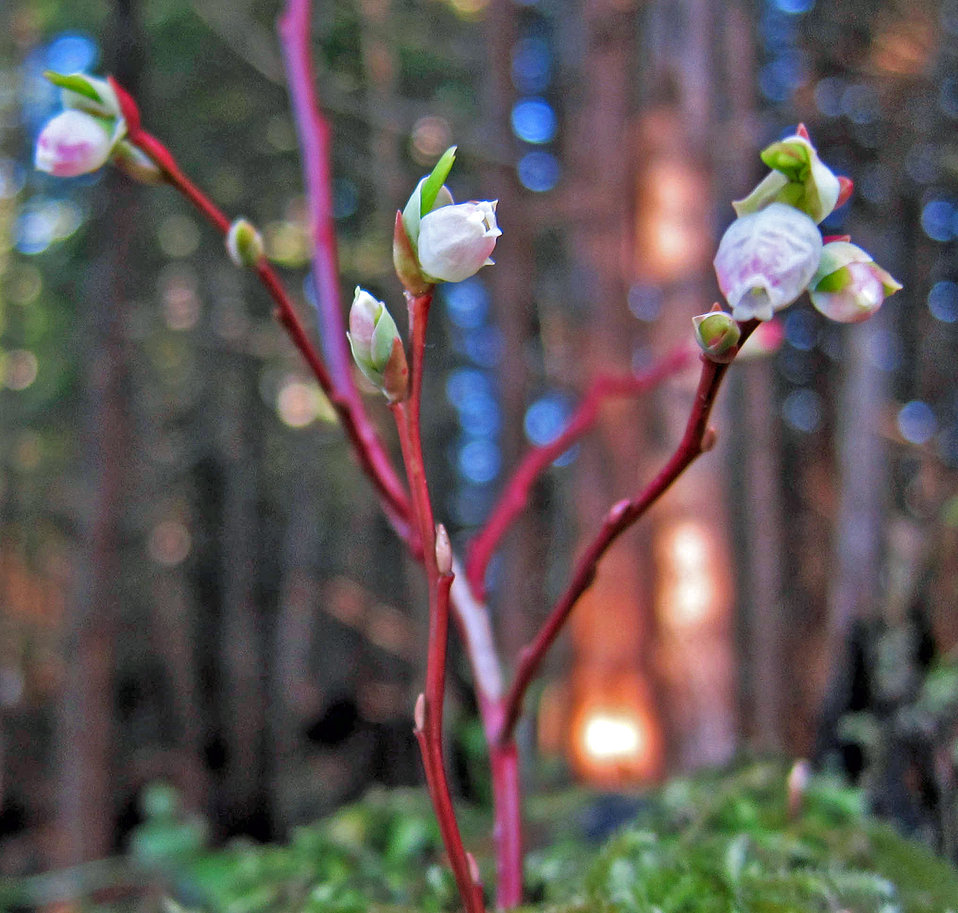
Alaska winter early Blueberry flower a

Early blueberry bush is budding out in mid-February in southeastern Alaska.